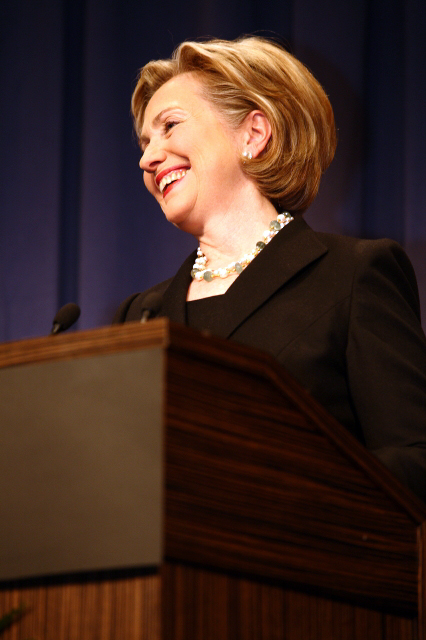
Press Conference With Russian Foreign Minister

Press conference after dinner meeting between U.S. Secretary of State Hillary Rodham Clinton and Russian Foreign Minister Sergey Lavrov in Geneva, Switzerland March 6, 2009.